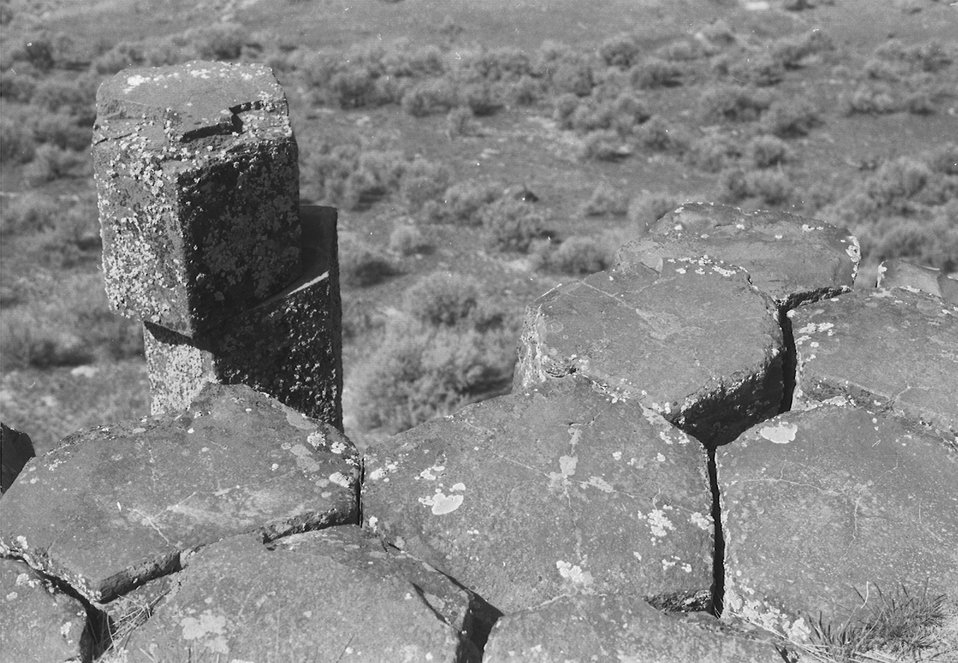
Offset basalt column Hexagonal Basalt UCSC Upper Columbia Salmon Clearwater District